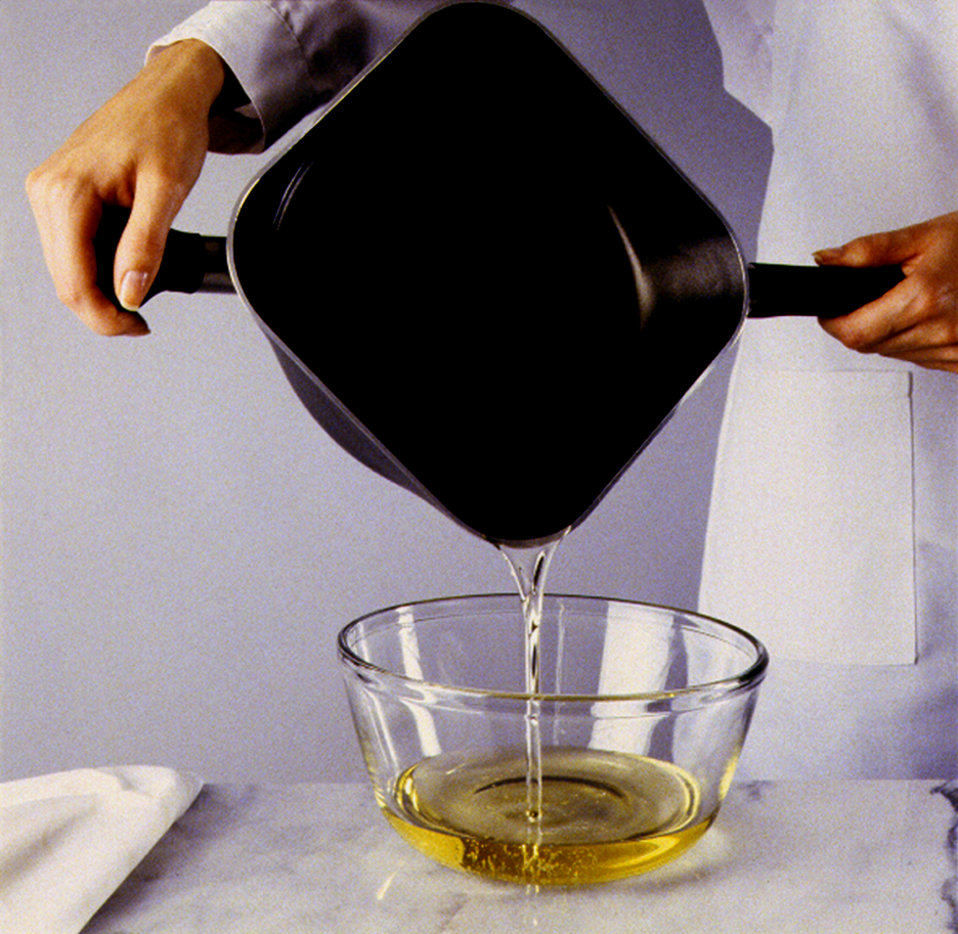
This was one of six images (PHIL# 9125 - 9130) depicting an Allegro� Cookware pot by Mirro�, the design of which was a radical departure from traditional cooking utensils. The square shape, unique lid and lightweight materials offered many ergonomic advantages. All the pots, pans and skillets were circular on their bottoms, gradually becoming square toward their tops. This cookware design made the most efficient use of standard round heat sources while at the same time offered greater cubic volume than a circular pot of the same height. As seen in this image, two of the corners created natural pouring spouts, a design consideration that was implemented in response to complaints common with more traditional round cookware. Note the larger, rubberized handles located on the alternate corners of the pot, which aligned and interlocked with the lid handles providing safe and balanced handling. Excess oil was being poured from one of the 'pour corners'.